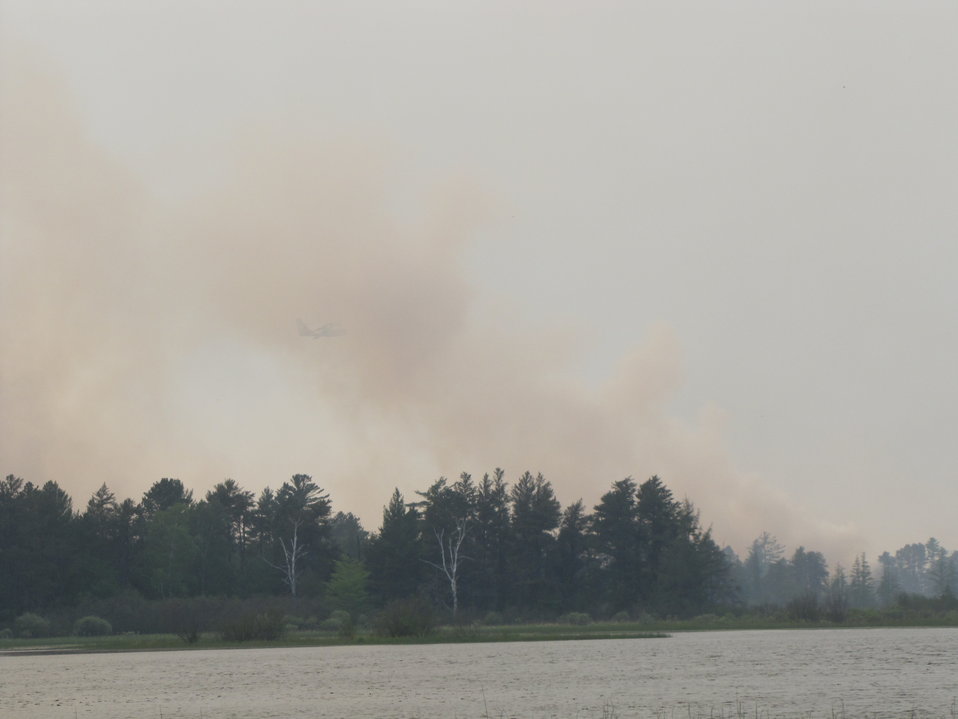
Smoke above Seney NWR